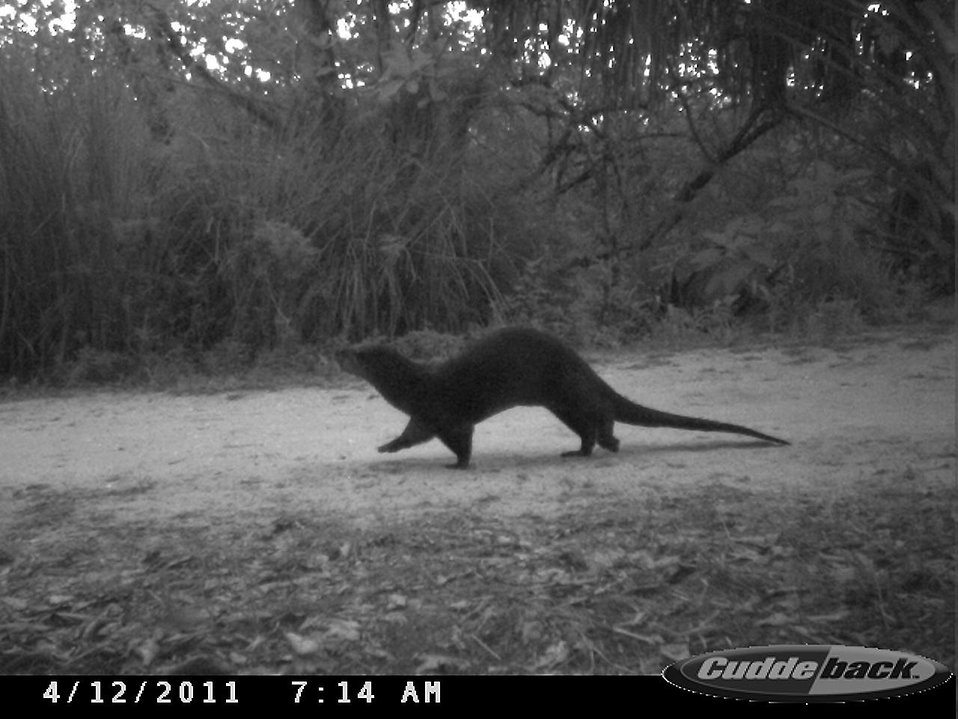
otter

J.N. Ding Darling National Wildlife Refuge, FL
Camera trap photo: USFWS